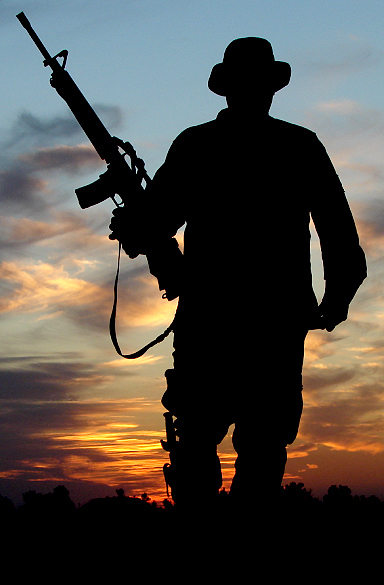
On watch

Staff Sgt. Jeremy Neumann stands watch in Southwest Asia, Nov. 8. Sergeant Neumann is with the 441st Air Expeditionary Group and deployed from the Missouri Air National Guard's 139th Airlift Wing.